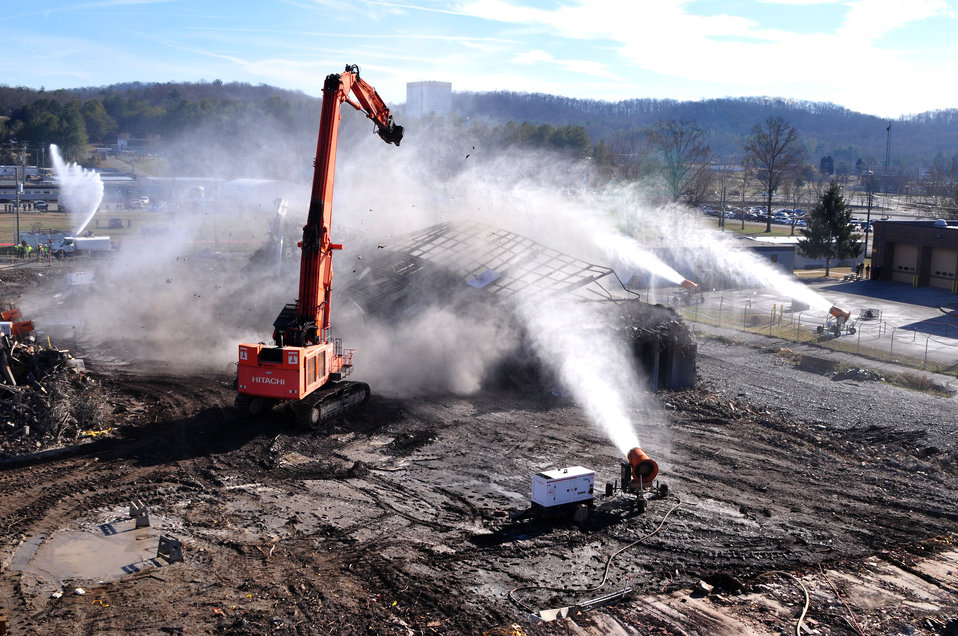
Last Part of K-25 Coming Down Oak Ridge 2013

13-157-1 DOE photo Lynn Freeny 12-19-2013 Oak Ridge Tennessee